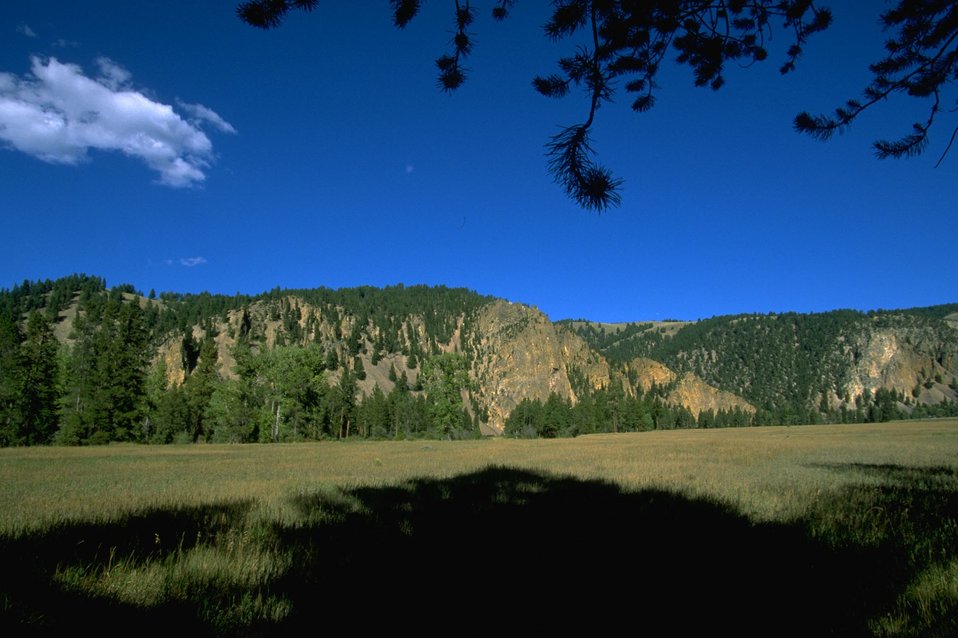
Squaw Rock ACEC (area of critical environmental concern)